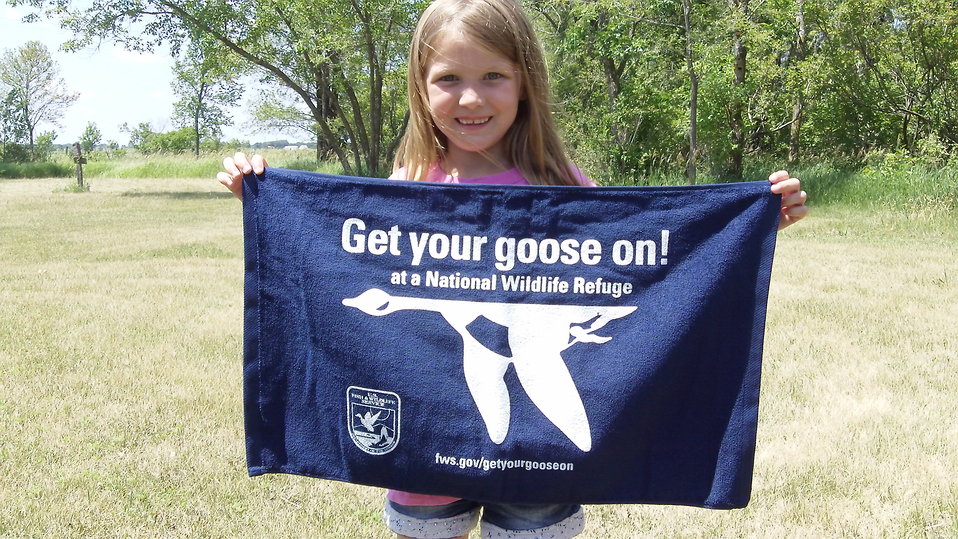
Get Your Goose On!

Photo taken at Huron Wetland Management District in east-central South Dakota.